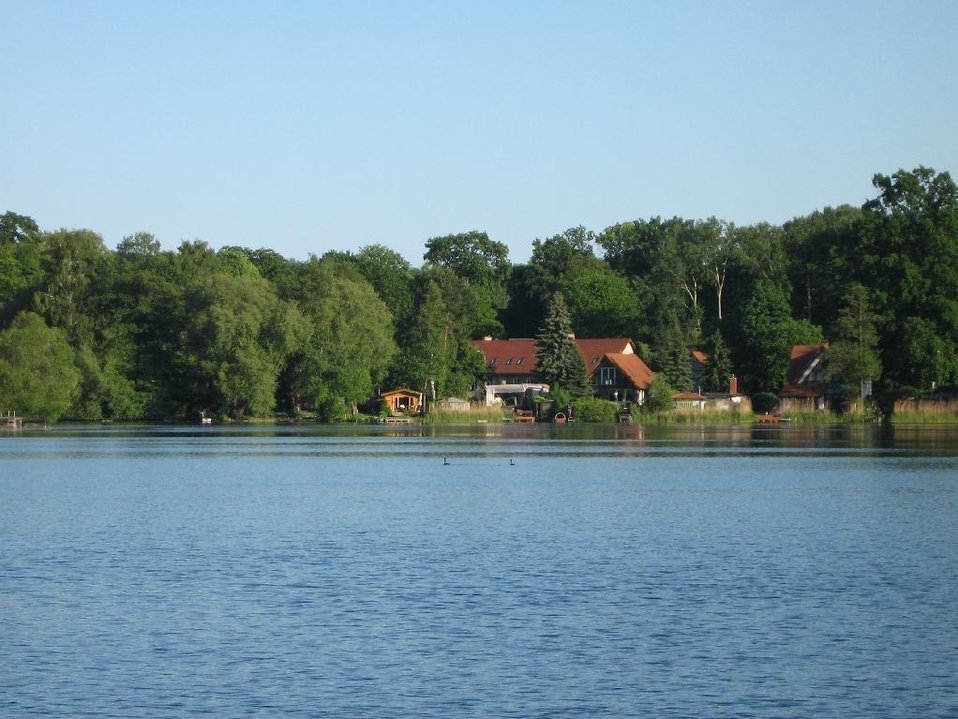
Deutsch: der Sacrower See im Königswald bei Potsdam (Brandenburg).